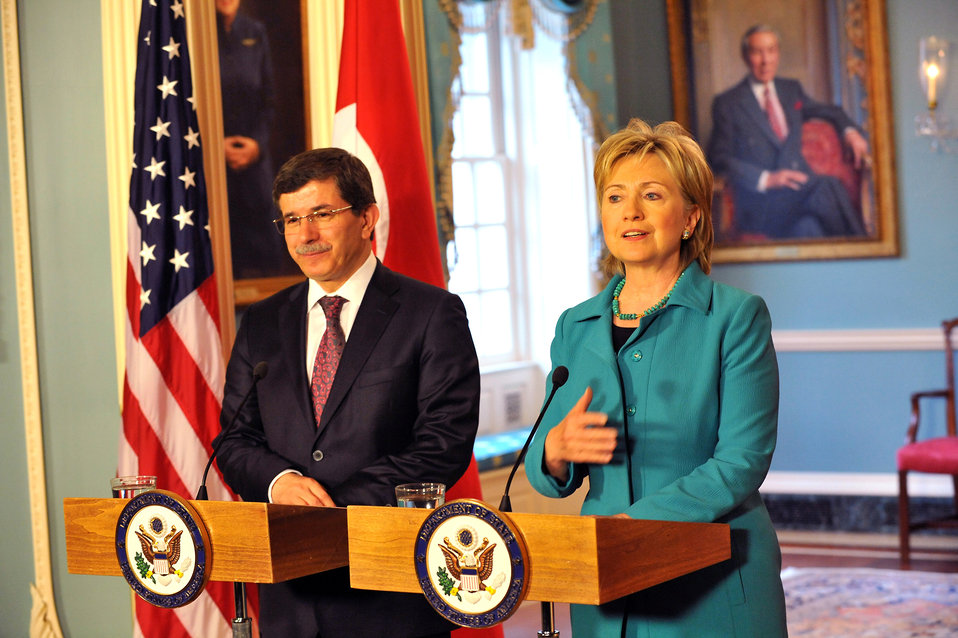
Secretary Clinton Meets With Turkish Foreign Minister

U.S. Secretary of State Hillary Rodham Clinton meets with Turkish Foreign Minister Ahmet Davutoglu at the U.S. Department of State in Washington, DC June 5, 2009.